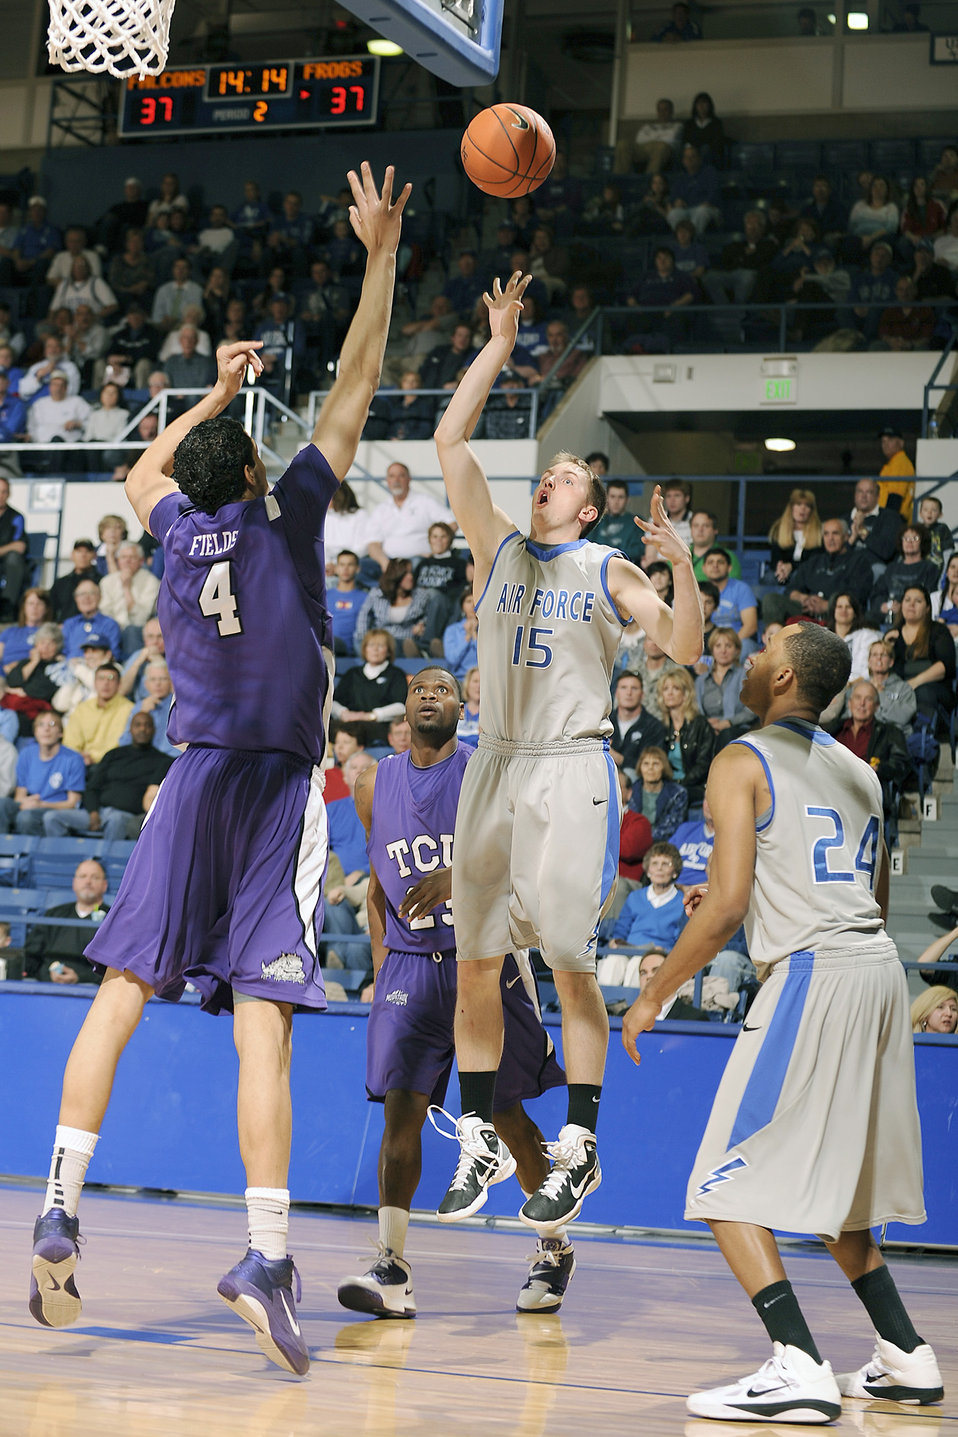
Falcons vs. Horned Frogs

The Air Force Academy's Taylor Stewart tosses up for two against Texas Christian University's Amric Fields during the Falcons' final home game of the season March 2, 2011, at the Academy's Clune Arena.